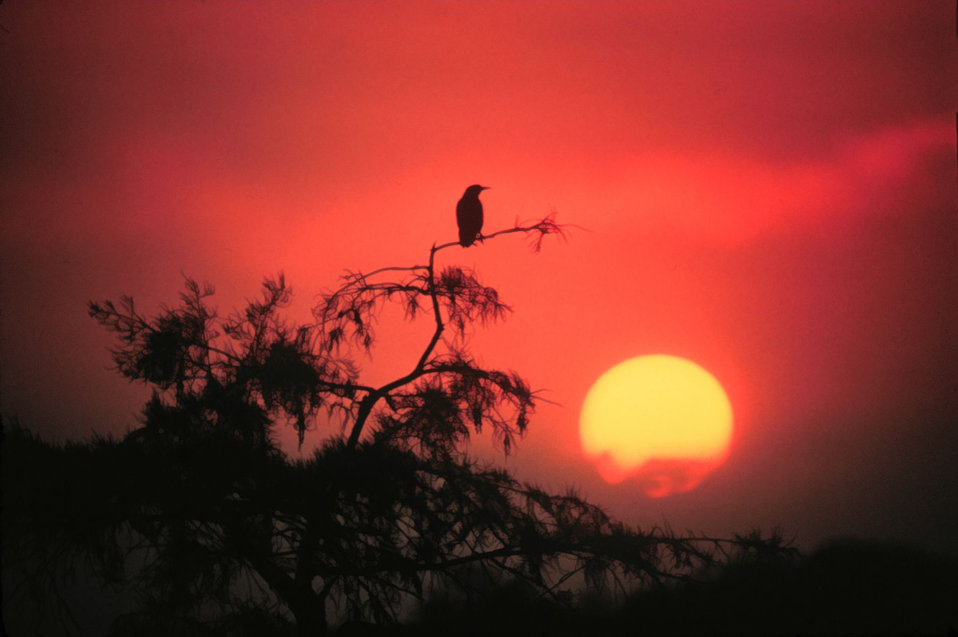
Sunrise over the Everglades